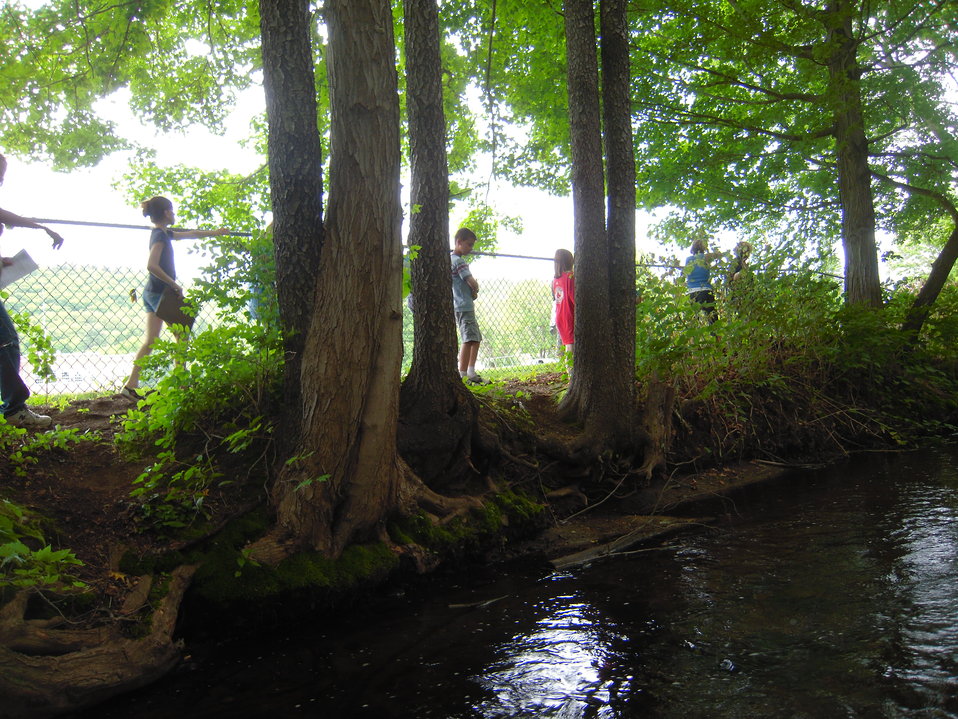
Walking along stream studying plants